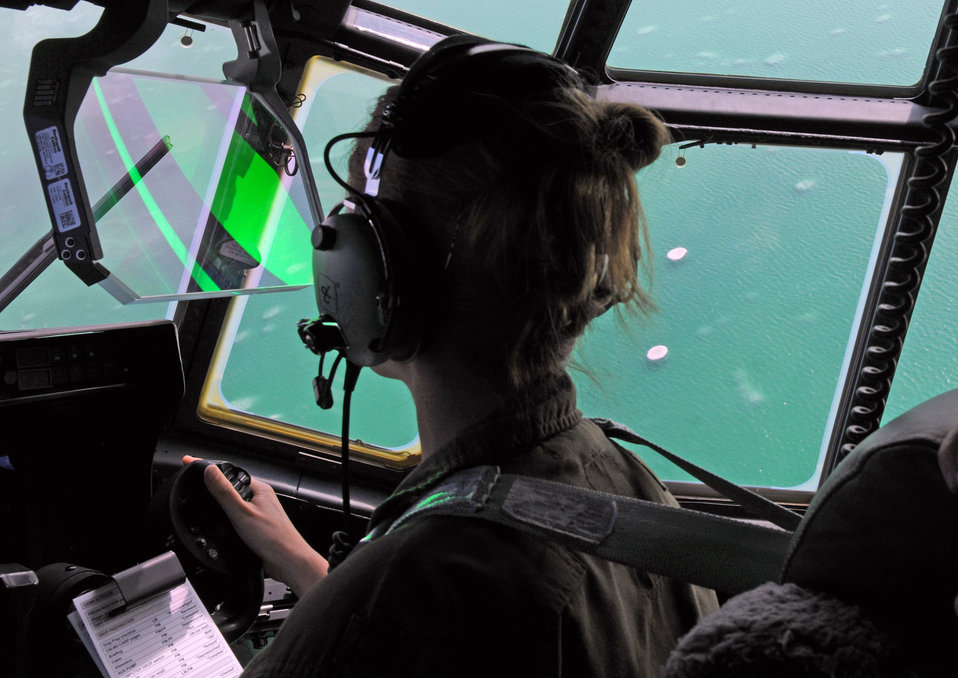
Ramstein Airmen train in Israel

Capt. Sarah Santoro navigates over the Dead Sea, the lowest point in the world, Dec. 6, 2009. Ramstein units participated in a 10-day training exercise to accomplish training requirements because of the strict air restrictions in Germany. Captain Santoro is the 37th Airlift Squadron mission commander for the Israel off station training.